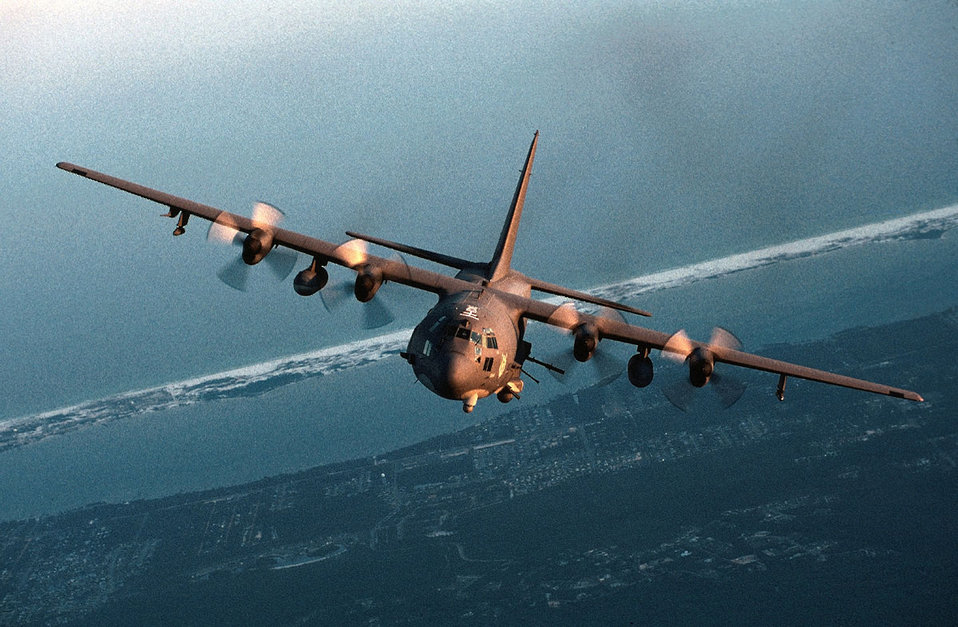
AC-130 Gunship

The AC-130 gunship's primary missions are close air support, air interdiction and force protection. Missions in close air support are troops in contact, convoy escort and urban operations. Air interdiction missions are conducted against preplanned targets or targets of opportunity. Force protection missions include air base defense and facilities defense.